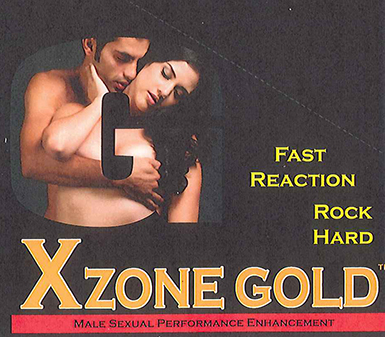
RECALLED – Dietary Supplement

April 1, 2014 – Product Recall – Nova Products, Inc. Issues Voluntary Nationwide Recall of Dietary Supplements with Undeclared Active Pharmaceutical Ingredients.